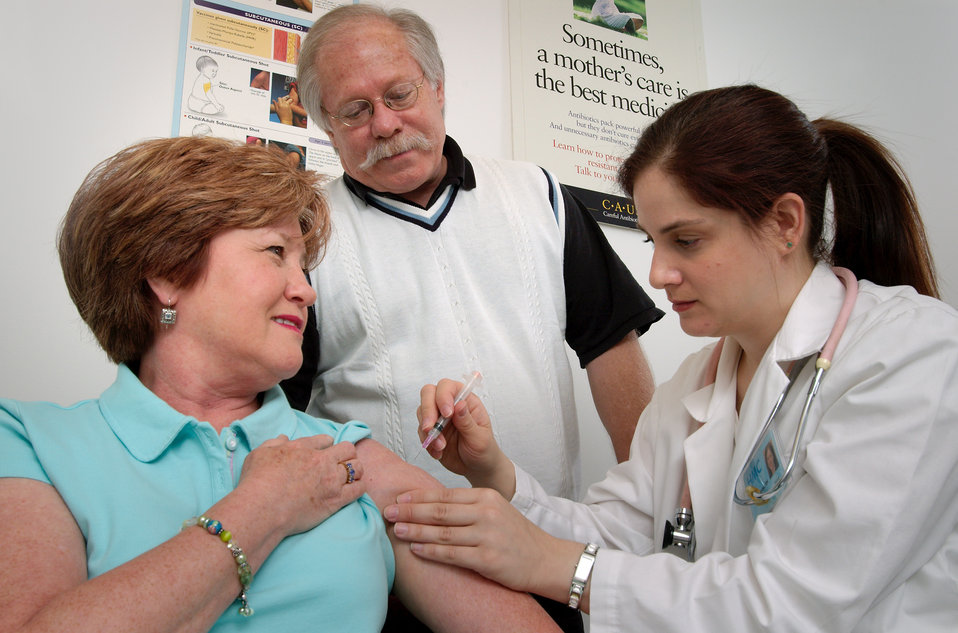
In this 2006 photograph, a middle-aged woman was receiving an intramuscular vaccination into her left shoulder muscle from a female nurse. A middle-aged gentleman was observing from beside, who received his immunization in PHIL 9305.